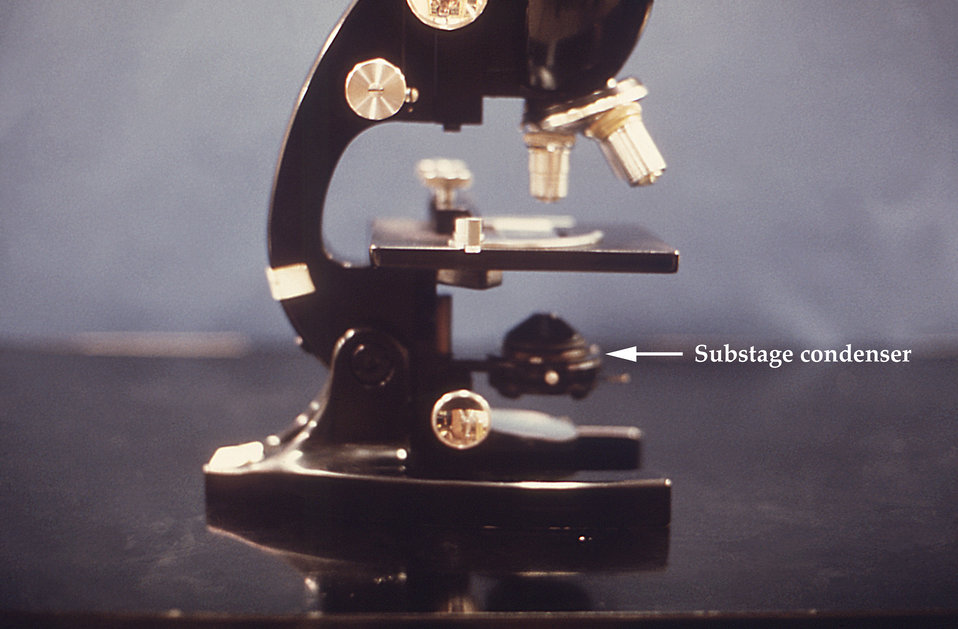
This is a side view of a typical light microscope with a substage condenser in place to focus the illumination beam.